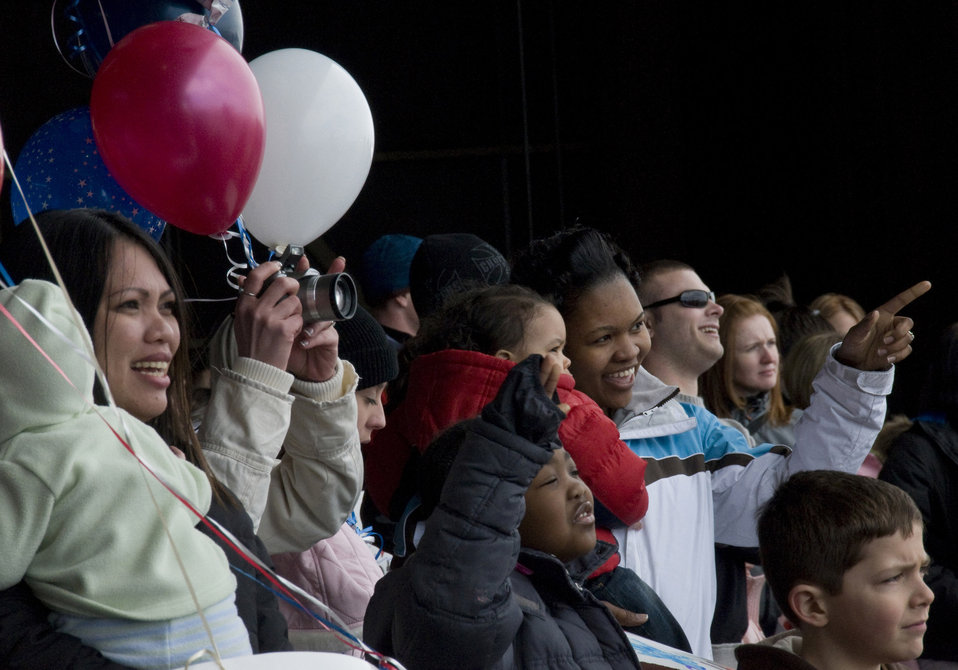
Misawa officials welcome home 300 deployed Airmen

Family members cheer the arrival of members of the 14th Fighter Squadron and 35th Maintenance Squadron March 1 at Misawa Air Base, Japan. Families gathered for their loved ones to return from a deployment to Joint Base Balad, Iraq.